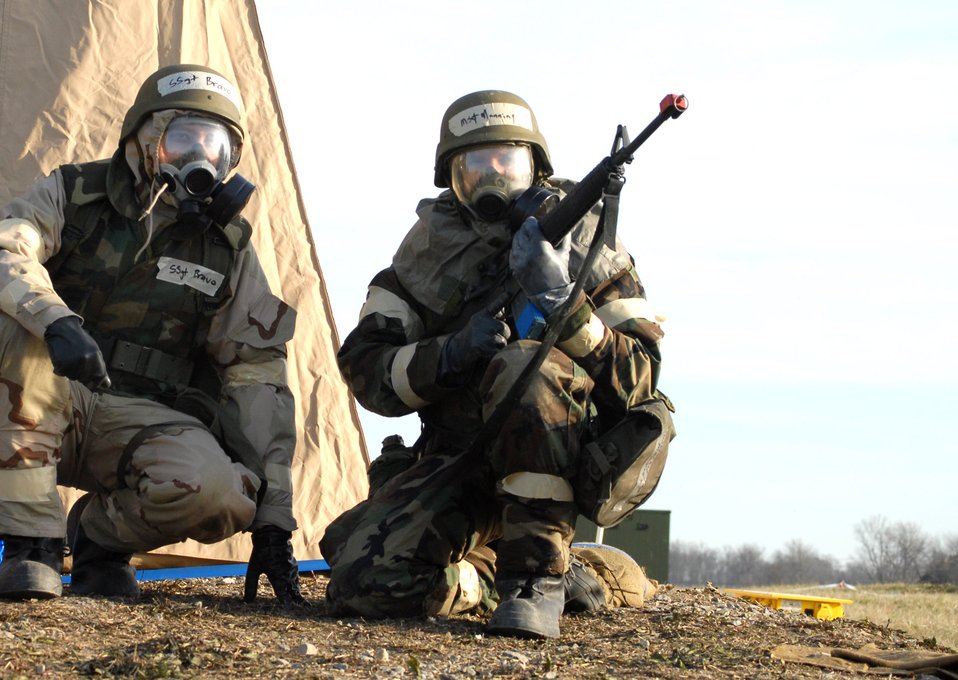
Dover exercise tests Airmen's combat environment skills

Master Sgt. Hugh Manning and Staff Sgt. Michael Bravo perform door guard duties and protect their tent during Exercise Haunted House Battle Ax Jan. 7 at Dover Air Force Base, Del. Defensive measures was one of the many skills practiced during the exercise. Sergeants Manning and Bravo are assigned to the 436th Aerial Port Squadron.